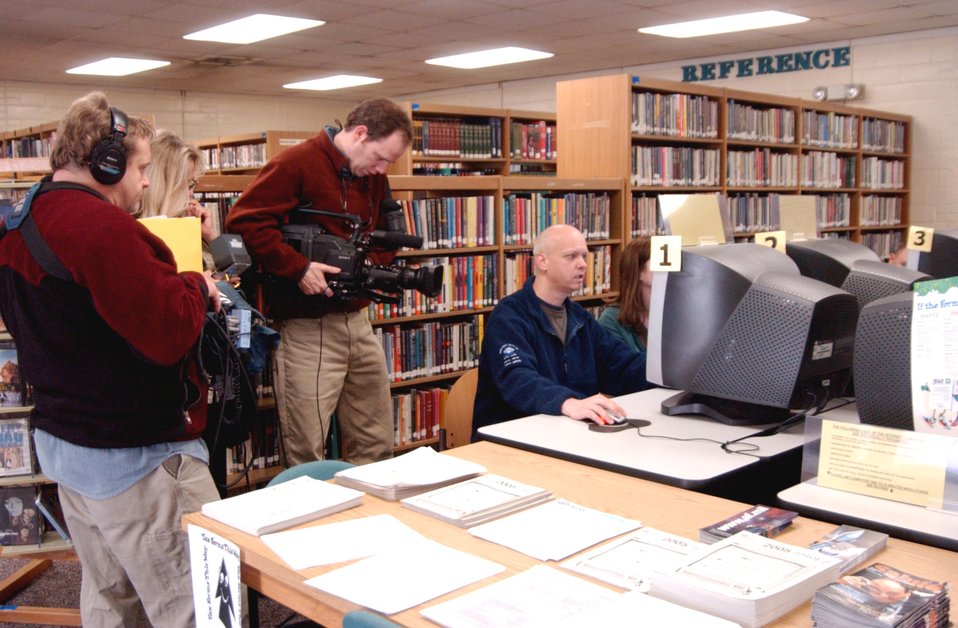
House hunters

MAXWELL AIR FORCE BASE, Ala. (AFPN) -- A Pie Town productions crew films Senior Master Sgt. Greg Day and wife, Diane, at the base library as they search the internet for homes for sale in the area. The filming is for the Home and Garden Television series